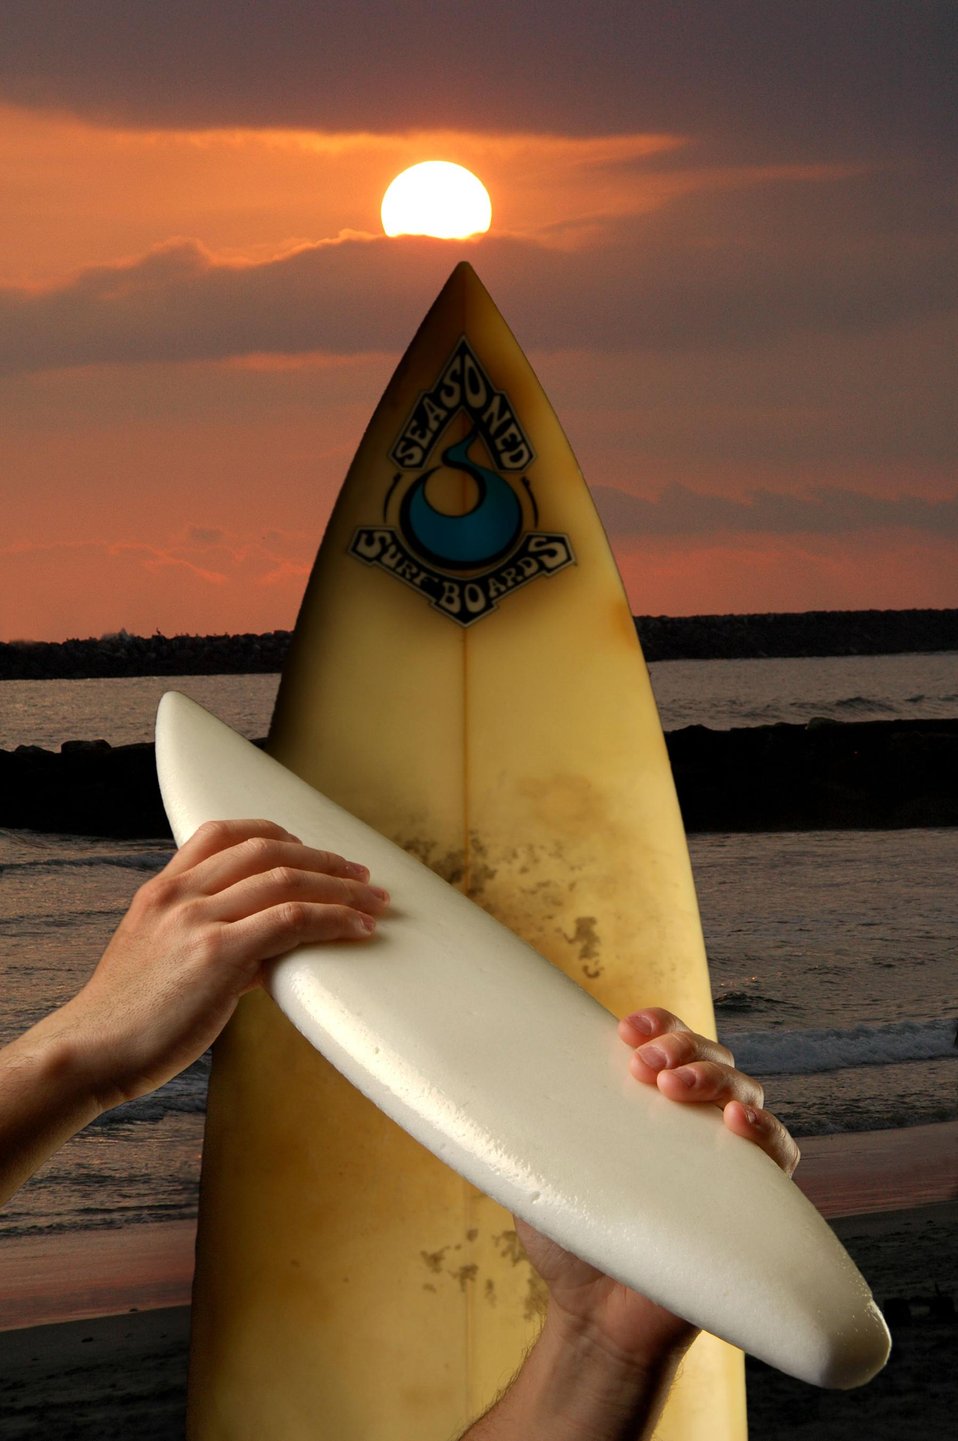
PICTURED IS A SURFBOARD BLANK THAT IS MADE FROM TUFFOAM AT SANDIA NATIONAL LABORATORY.

THE TUFFOAM WAS ORIGINALLY INVENTED BY SANDIA SCIENTISTS FOR THE NATIONAL NUCLEAR SECURITY ADMINISTRATION AS AN ENCAPSULATED MATERIAL TO PROTECT SENSITIVE ELECTRONIC AND MECHANICAL STRUCTURES FROM HARSH WEAPONS ENVIRONMENTS. IT IS A LOW-DENSITY, ENVIRONMENTALLY FRIENDLY FOAM. THE MATERIAL CAN BE USED FOR THERMAL AND ELECTRICAL INSULATION. SOME COMMON USES ARE BUMPERS AND AIRPLANE WINGS. THE TUFFOAM IS COMMERCIALLY AVAILABLE.